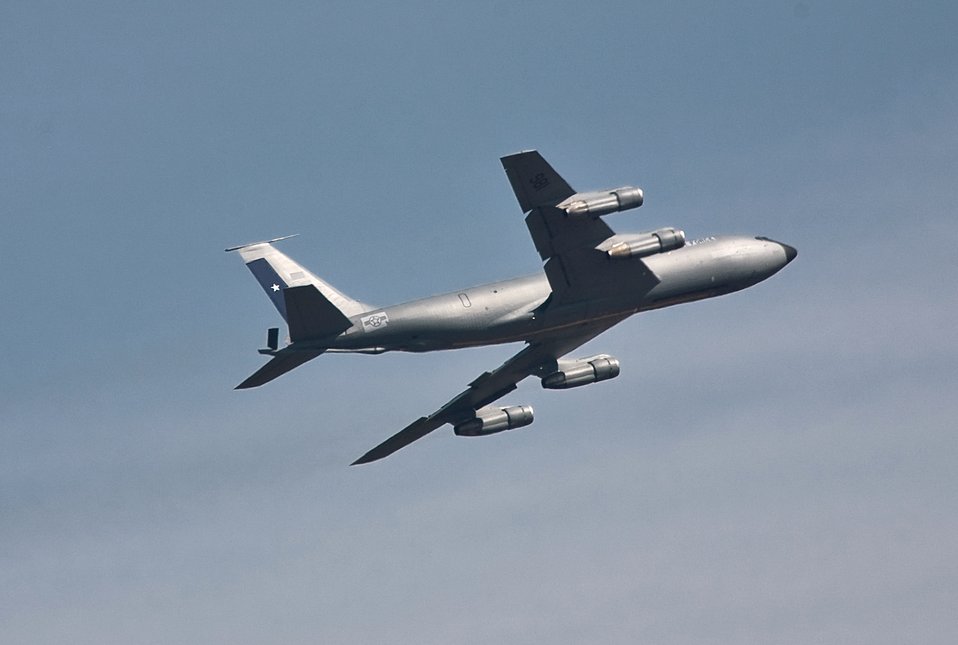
Chilean air force's latest tanker

Above Port San Antonio, a KC-135E Stratotanker completes a test flight over San Antonio on Feb 13, 2010. It is the first of three tankers to be delivered to the government of Chile through the U.S. foreign military sales (FMS) program. These tankers will augment their current fleet of Boeing 707-based tankers. The San Antonio Boeing Support Systems site specializes in several maintenance and modification processes for U.S. and international military customers. The two other tankers are at Boeing's San Antonio site for programmed depot maintenance before being delivered later this year. The aircraft is seen with transitional marking showing the permanent Chilean air force tail markings, and temporary decals of the U.S. Air Force on other areas for the delivery flight to Chile, when the aircraft arrived in Chile on Feb 16 the decals were peeled off revealing all the Chilean air force marking. FMS is managed and operated by DoD on a no-profit and no-loss basis. Countries and international organizations participating in the program pay for defense articles and services at prices that recoup the actual costs incurred by the United States. Air Force Security Assistance Center oversees system sales and support for more than 170 models of aircraft - a fleet totaling more than 6,600.